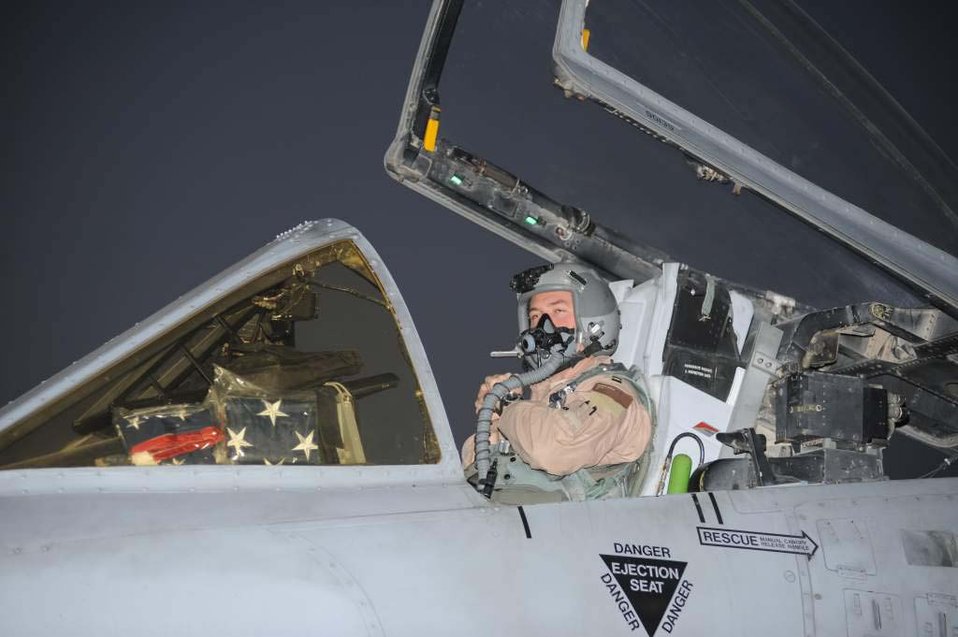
Capt. Ryan Hayde prepares to fly a mission over Afghanistan accompanied by American flags. Flags from all countries, sports teams, and schools may be flown as part of the 451st AEW flag flying program. Captain Hayde is an A-10 Thunderbolt II pilot assigned to the 75th Expeditionary Fighter Squadron.